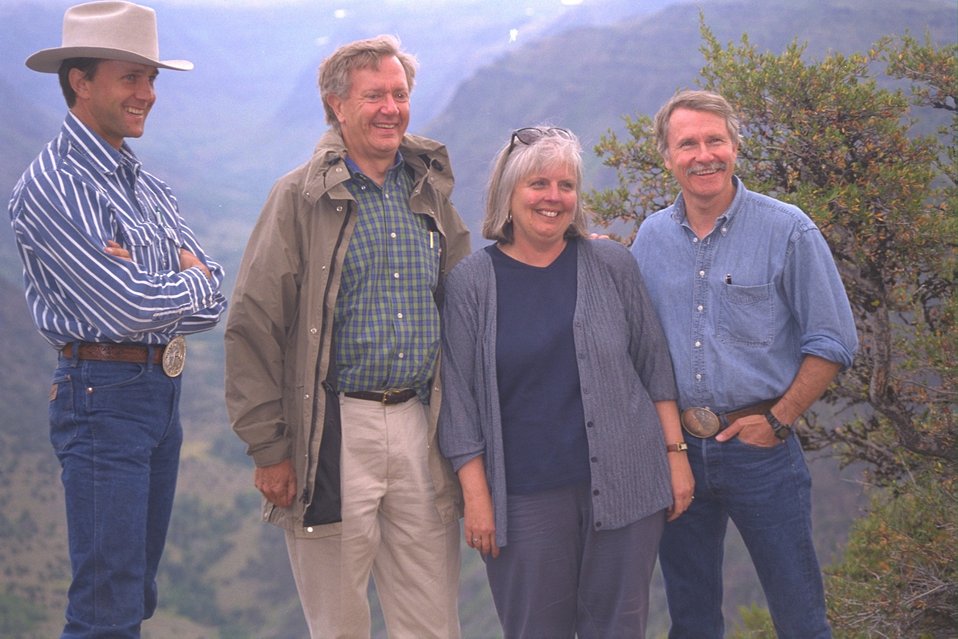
(left-right) Roaring Springs Ranch manager Stacy Davies, Secretary Babbitt, Elaine Zielinski, and Governor Kitzhaber at Big Indian Gorge overlook.